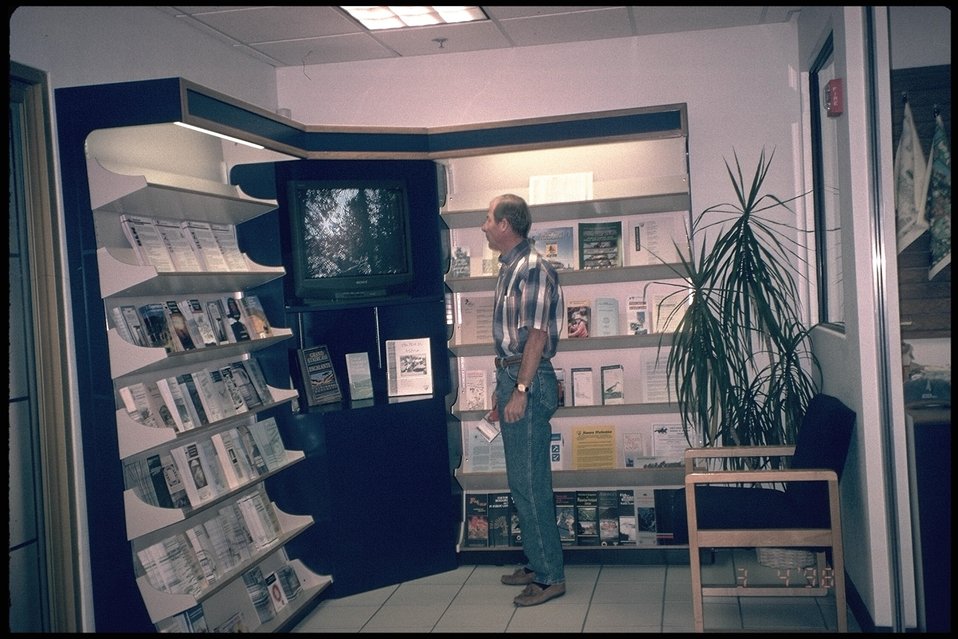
Volunteers help stock "free" information on public lands in the PLIC's lobby. The Arizona Public Lands Information Center (PLIC) is a partnership between the nonprofit Public Lands Interpretive Association and the Bureau of Land Management. The Center offers one-stop-shopping and up to date information on all of the public lands in Arizona. Located at 222 North Central Avenue, Phoenix, Arizona 85004. Phone: 602-417-9300.